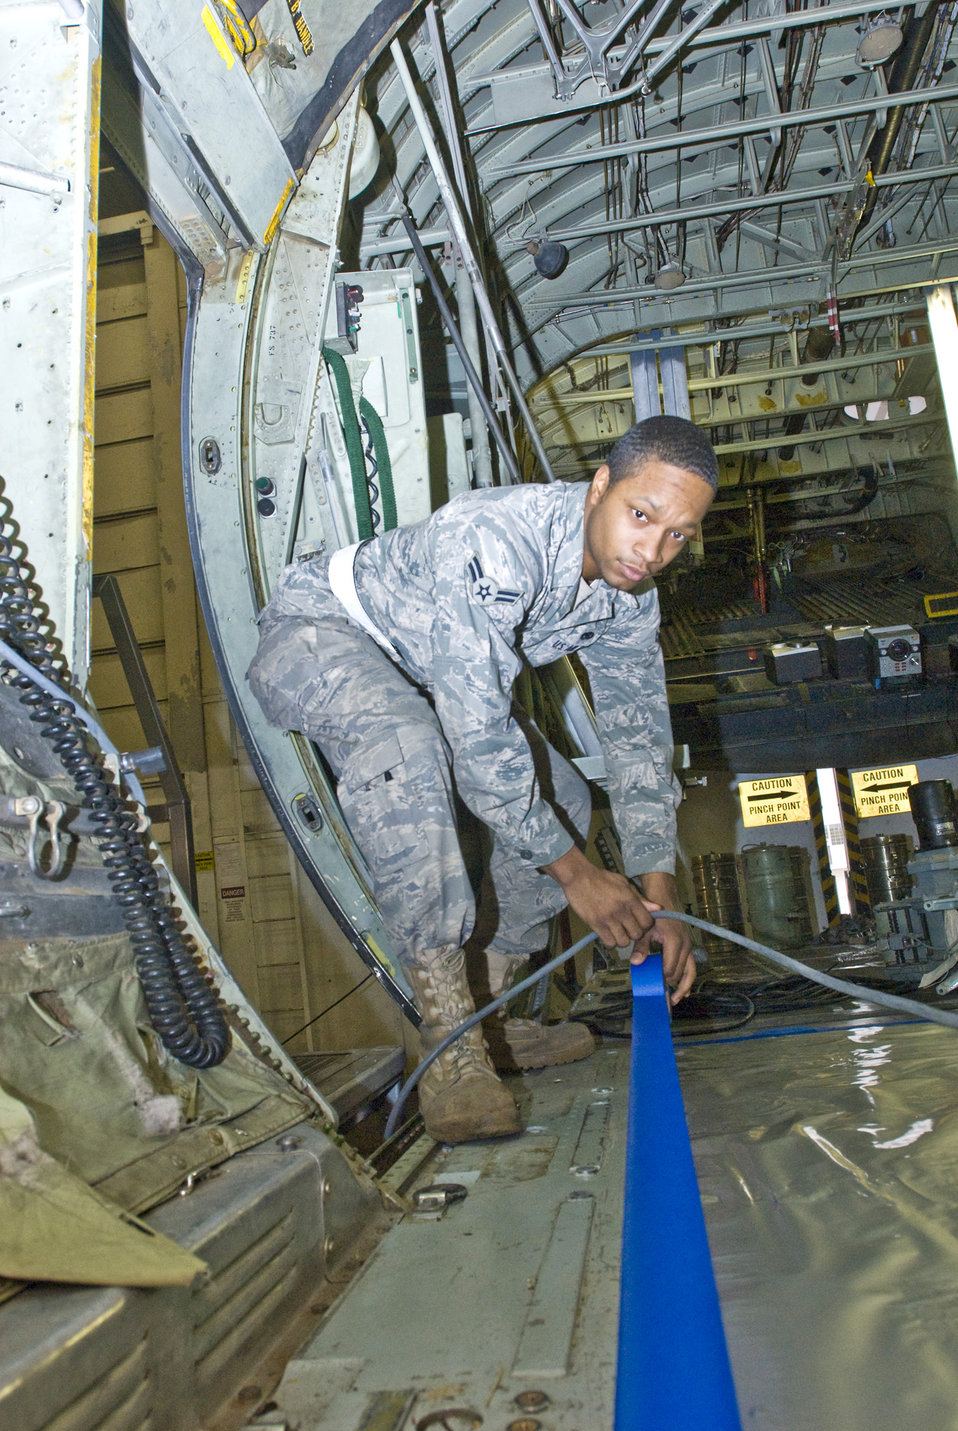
Refurb Crew

Airman 1st Class Otez McSpadden tapes down protective foil prior to sanding and painting parts of the C-130 Hercules Jan. 5, 2011, at Little Rock Air Force Base, Ark. Airmen from the squadron's C-130 refurbishment section revive Air Mobility Command's aging fleet of C-130s. Airman McSpadden is a 19th Equipment Maintenance Squadron aircraft structural maintenance journeyman.